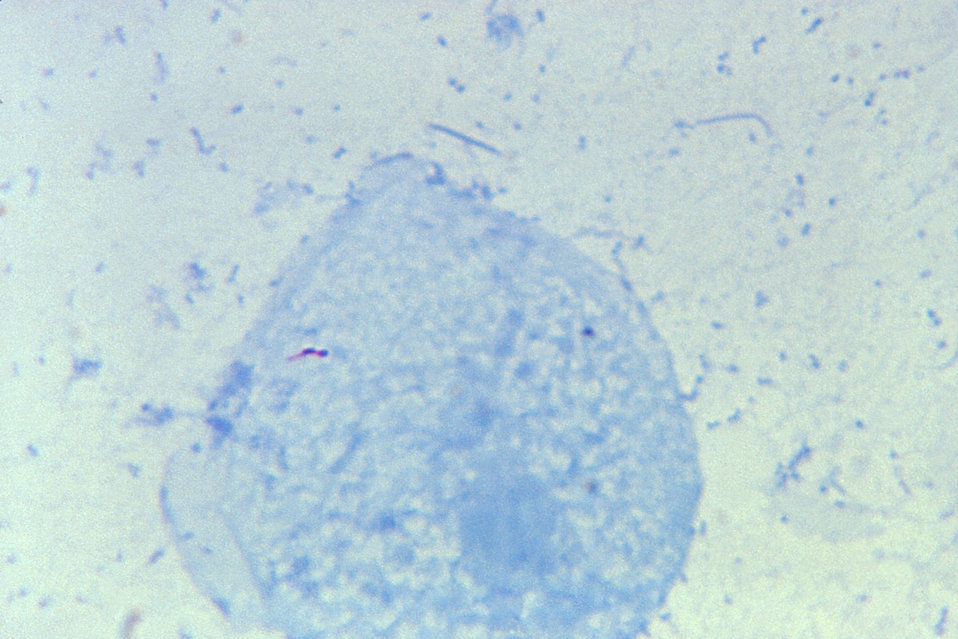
Here Mycobacterium tuberculosis in a sputum smear is stained using the Ziehl-Neelsen technique; Magnified 1000x.